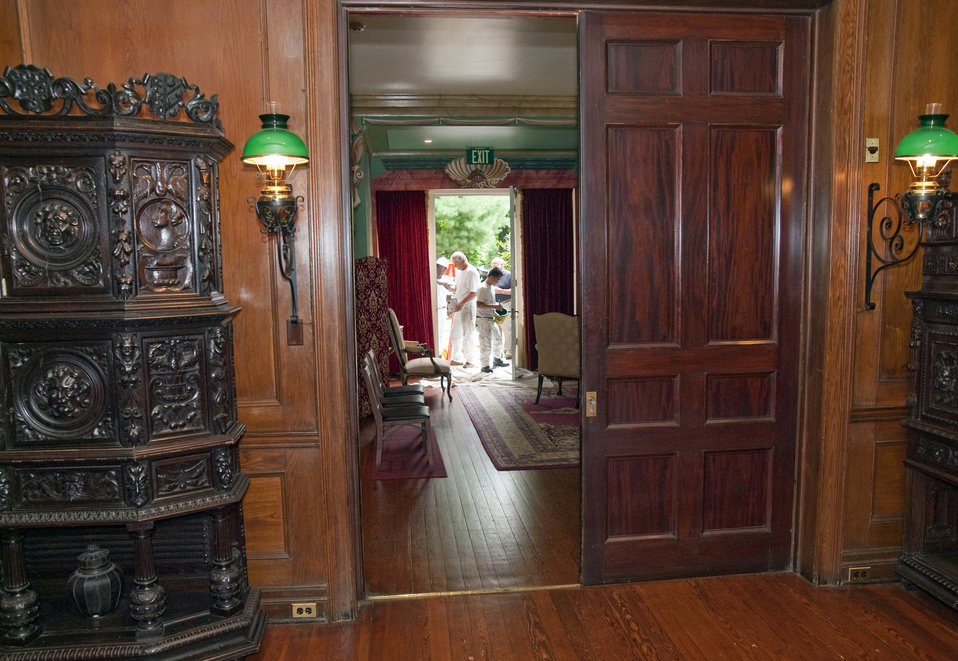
)Job Corps students help to restore Grey Towers National Historic Site. $2,440,000 in Recovery Act funds were allocated to repair and refurbish the house and grounds of the ancestral home of the first Chief of the Forest Service and two-term Pennsylvania governor Gifford Pinchot on Tuesday August 3, 2010 in Milford, PA. This project at the 123-year-old site repairs various deficiencies with the buildings and grounds, restores areas of the historic landscape, improves visitor safety and site security, provides a more sustainable facility, and enhances the visitor experience. It helps to ensure the historic site is maintained for years to come.